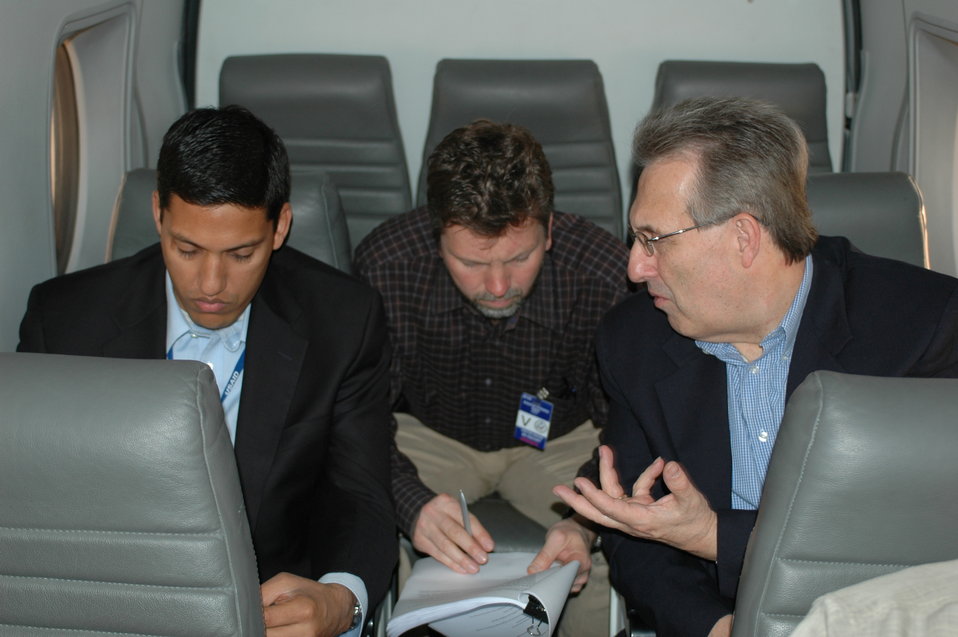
Dr Shah Visits Kandahar April 9, 2010